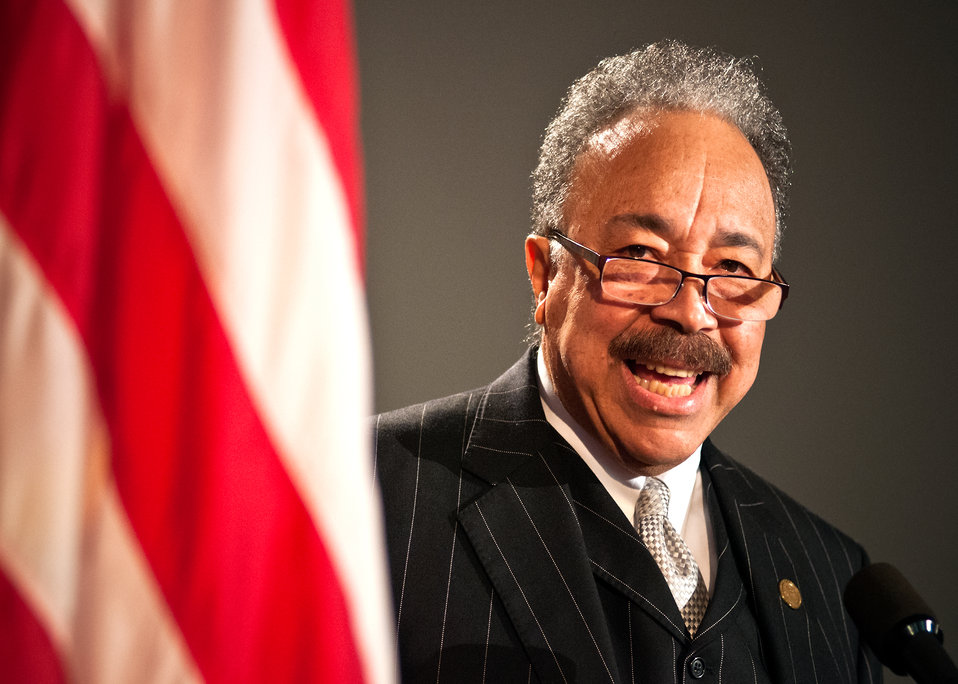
Dr. William R. Harvey, President, Hampton University, Hampton, Virginia addresses employees and visitors at the National Service Day and Martin Luther King Celebration in honor of Dr. Martin Luther King Jr.’s contributions to the Civil Rights Movement at the United States Department of Agriculture in Washington, D.C., on Thursday, January 12, 2012. Dr. Harvey spoke of Dr. King’s life and struggles and how we as citizens can use those lessons to improve our lives and the lives of others by the simple act of service to others.